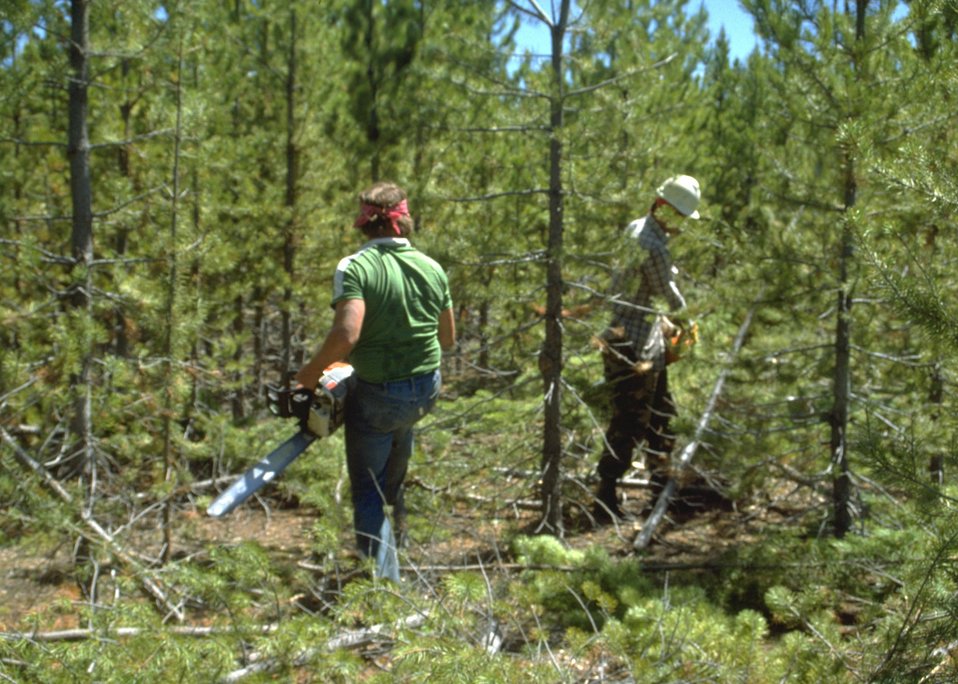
Removal of thick brush.